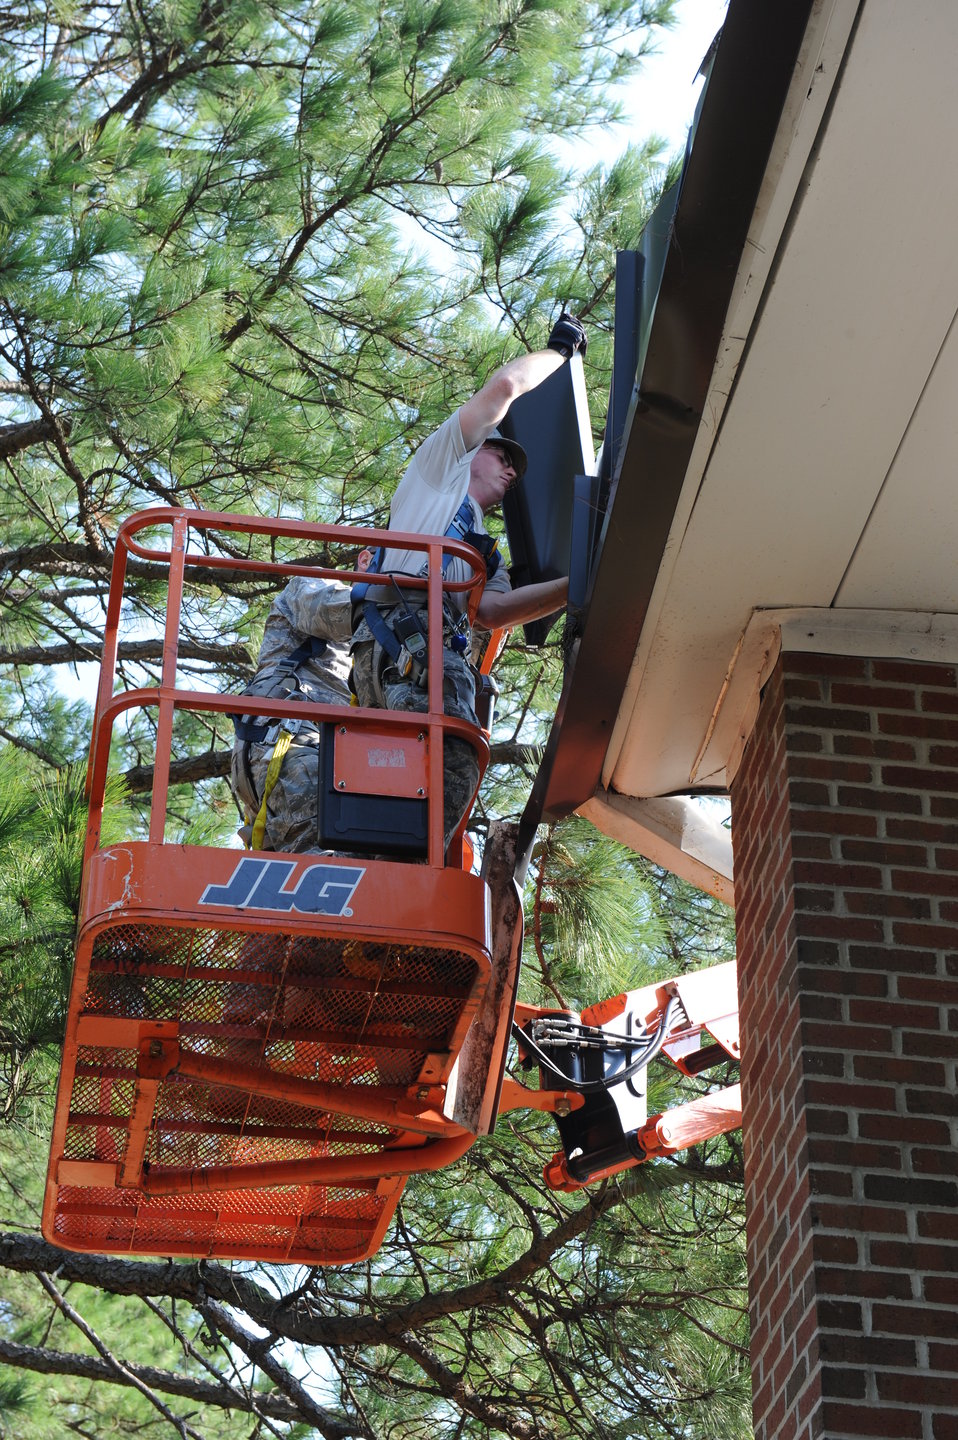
SJAFB cleans up after Irene

Airman 1st Class Calvin Myers removes a large piece of siding from the Berkeley Gate guard shack roof in the aftermath of Hurricane Irene at Seymour Johnson Air Force Base, N.C., Aug. 28, 2011. The base received nearly ten inches of rainfall and 60-knot winds Aug. 27, which resulted in approximately 40 fallen trees and roof damage to a few base facilities. Myers is from the 4th Civil Engineer Squadron Structures Shop.